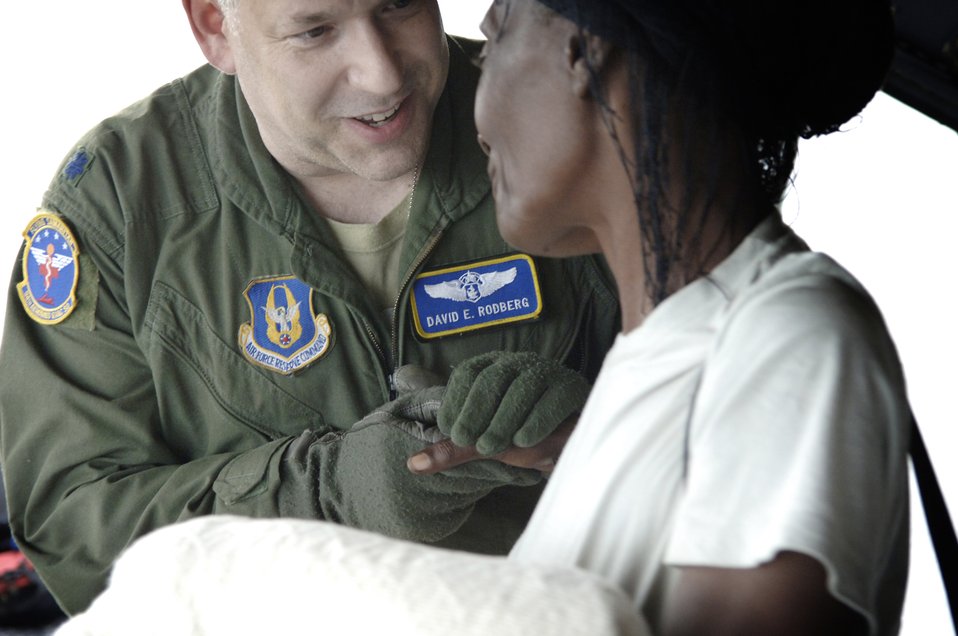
Air Force 'angels' rescue injured Haitians

Lt. Col. David Rodberg bids farewell to one of the passengers on an aeromedical evacuation flight out of Haiti, Jan. 22 and 23, 2010. In all, 18 urgent care patients, four critical-care patients and 26 attending family members were escorted by Colonel Rodberg's team, based at Dobbins Air Reserve Base, Ga. Colonel Rodberg is the medical crew director of the 94th Aeromedical Evacuation Squadron.